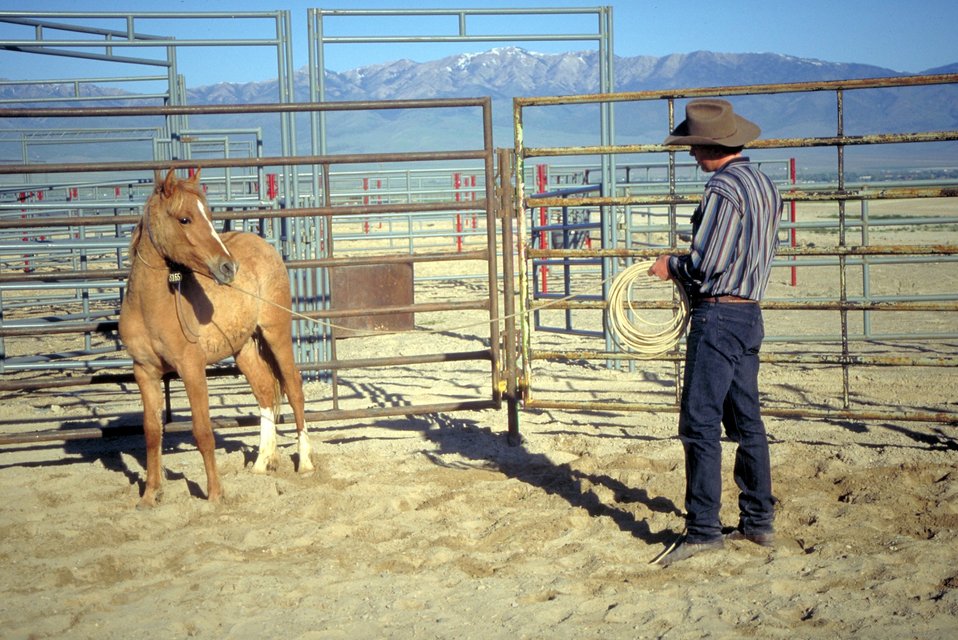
Utah Annual Wild Horse Festival.